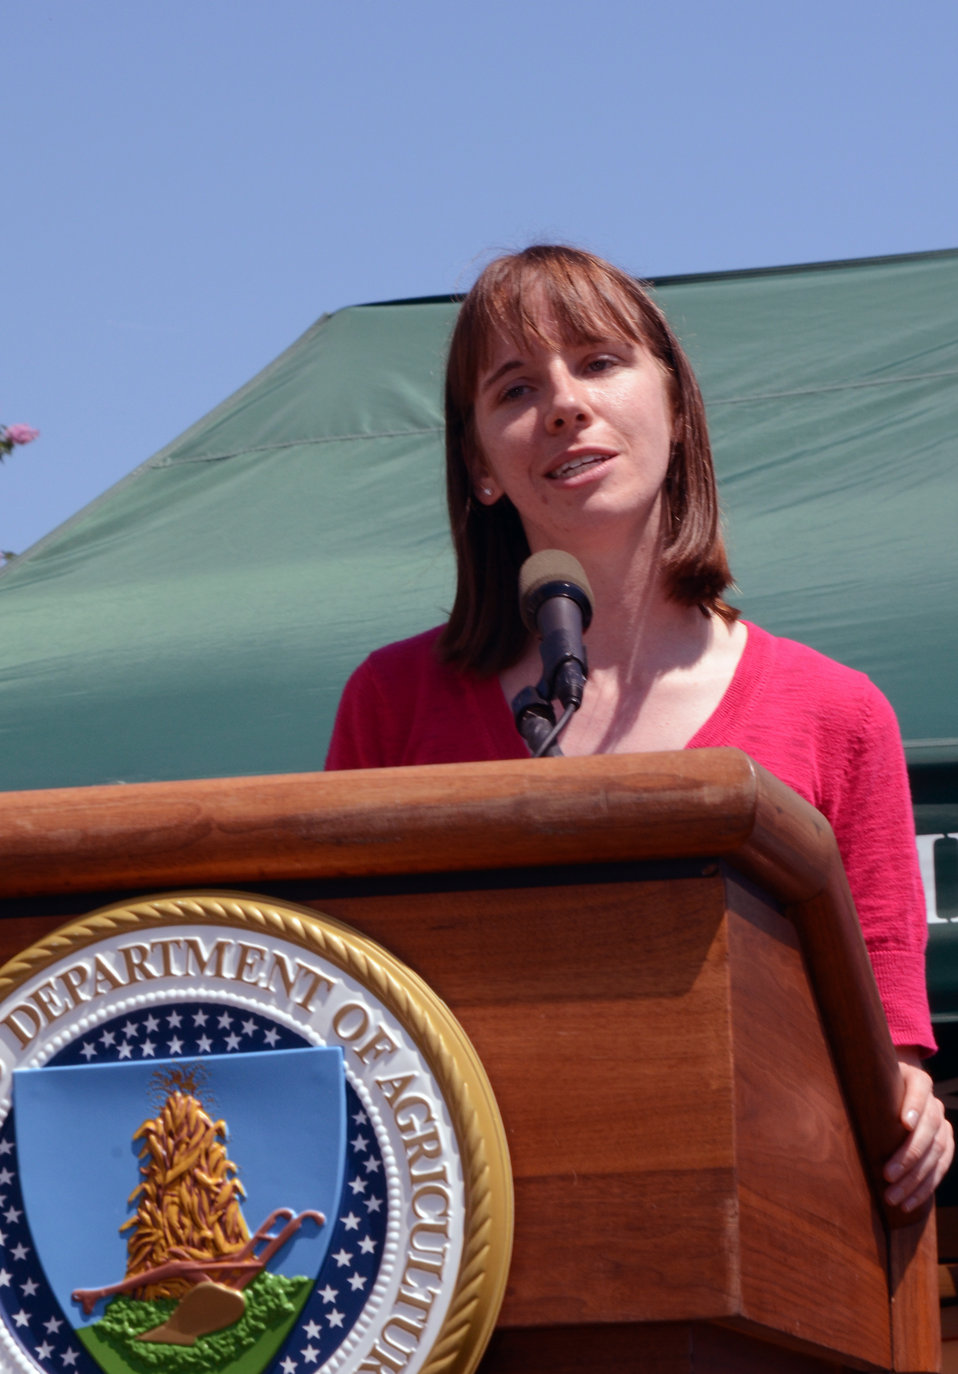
Jenny Shea, Partner Relations Manager of Capital Area Food Bank speaks at the USDA kickoff event for Feds Feed Families at the U.S. Department of Agriculture Farmers Market in Washington, D.C., on Friday, June 8, 2012.